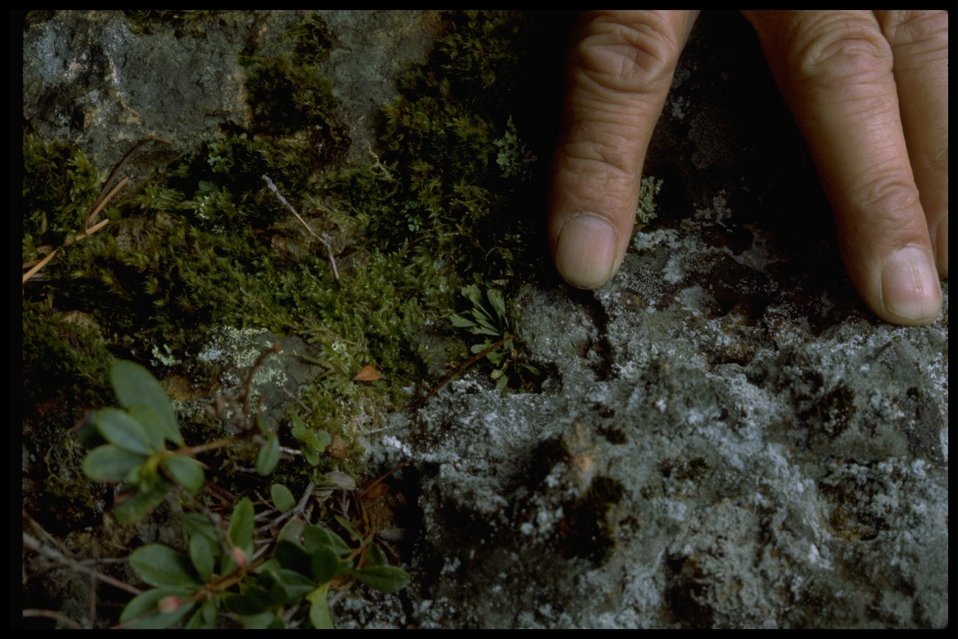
Farshot of grass fern (Asplenium septentrionale).